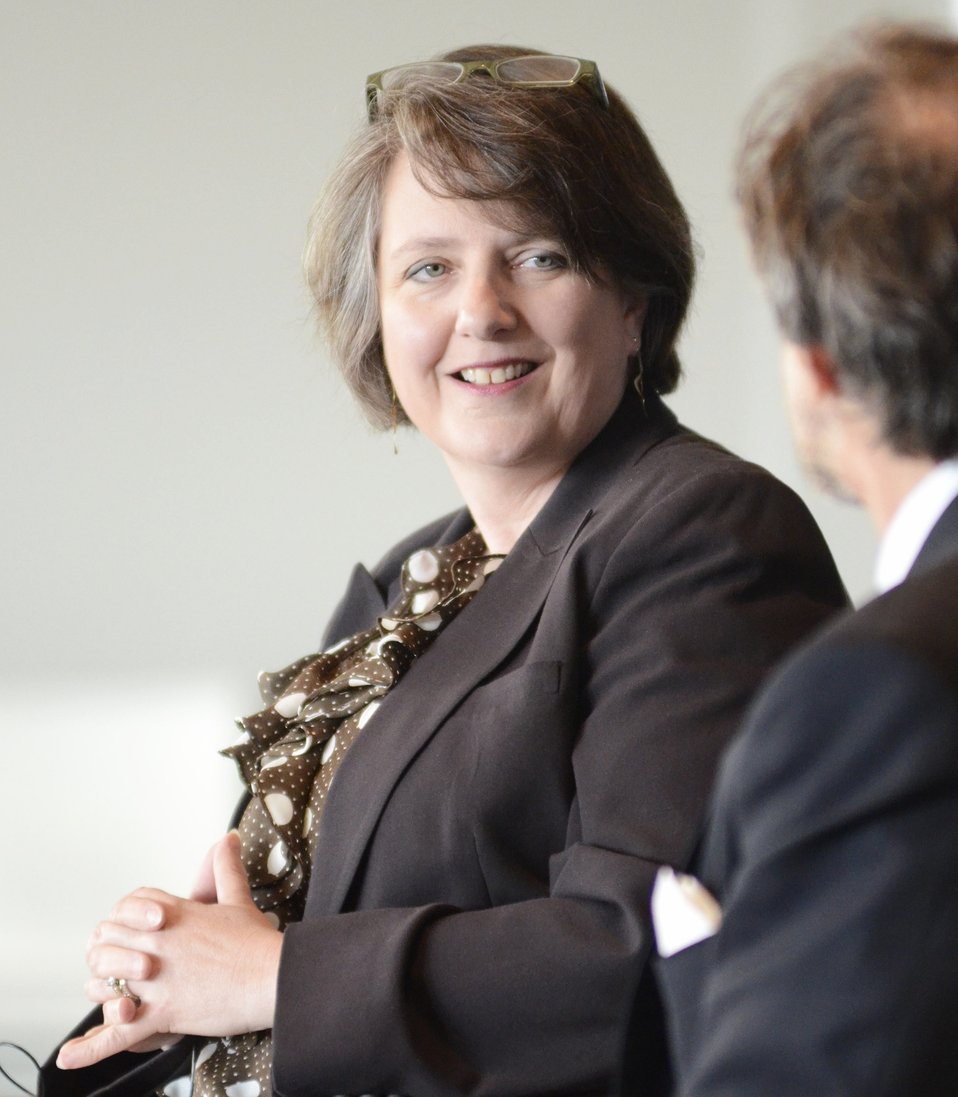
The Atlantic Senior Editor Corby Kummer interviews Agriculture Deputy Secretary Kathleen Merrigan at the 3rd Annual Food Summit held at the W Hotel in Washington, D.C. on Thursday, May 24, 2012. The Food Summit event includes interviews, panel discussions and symposia with leading authorities on issues related to food, food security, and nutrition.